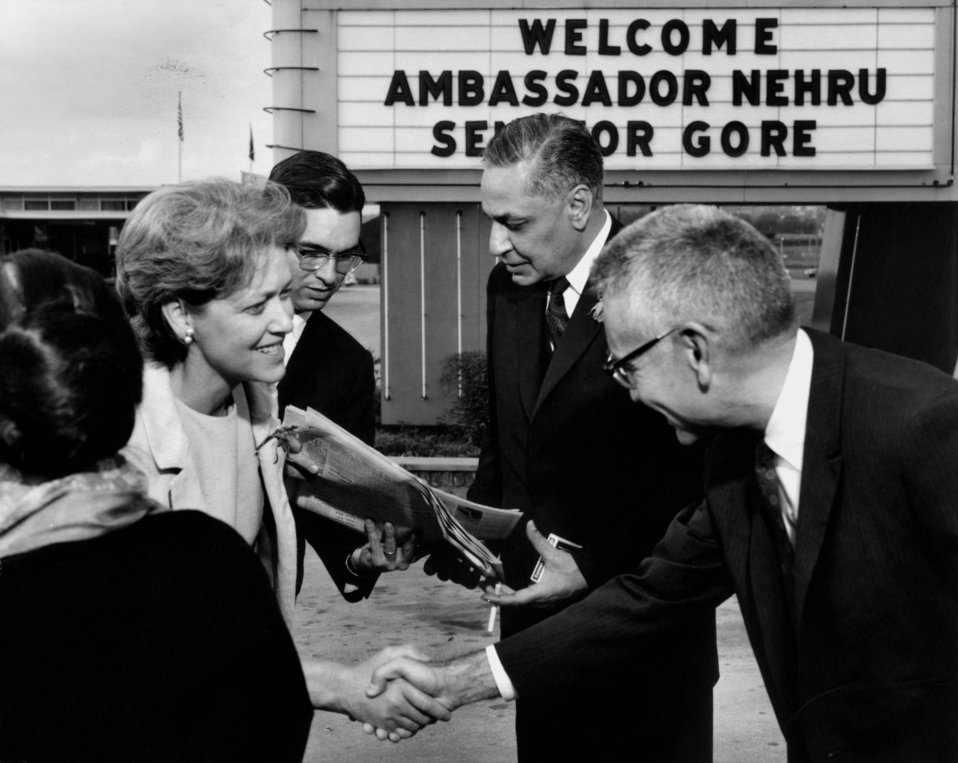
Pauline Gore (wife of Albert Gore Sr.) shakes hands with Dr.Alvin Weinberg as Braj Kumar Ambassador of India Oak Ridge

63-1166-3 DOE photo Ed Westcott

Pauline Gore (wife of Albert Gore Sr.) shakes hands with Dr.Alvin Weinberg as Braj Kumar Ambassador of India to the United States looks at a newspaper. The Oak Ridge Holiday Inn sign in background Oak Ridge Tennessee 10-25-1963